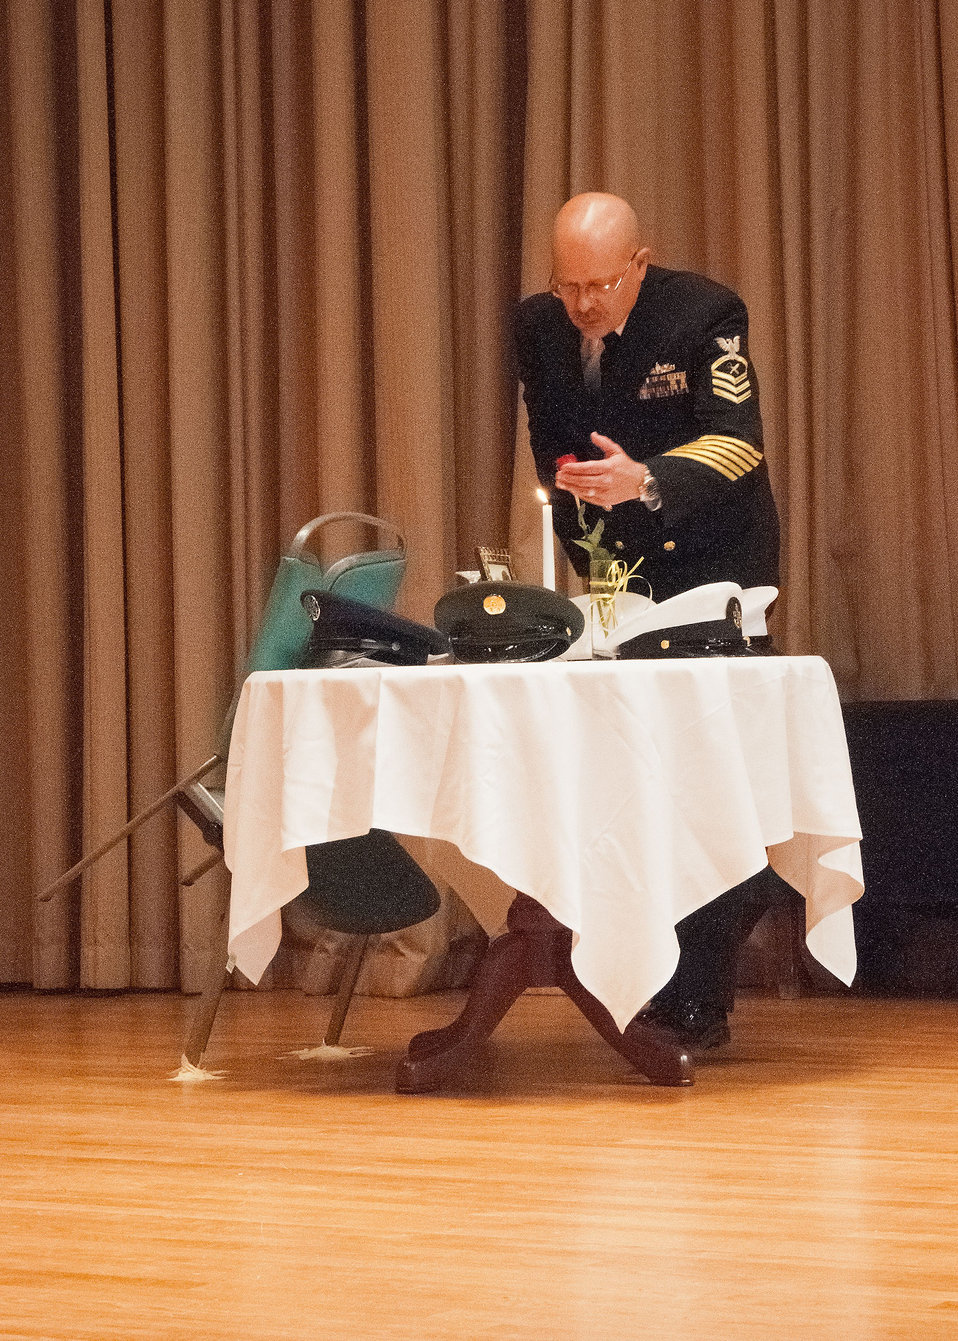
Classified National Security Programs, Office of Homeland Security and Emergency Coordination (OHSEC) U.S. Department of Agriculture U.S. Navy Chief Keith T. McElfresh extinguishes the candle before retiring the POW/MIA Table at USDA's Veterans Day Observance: Honoring All Who Served Wednesday, Nov. 7, 2012 in Washington, D.C. The POW/MIA Ceremony is an opportunity to remember those gallant individuals who fought and died for our country and paid an incredible price to help preserve the freedoms we enjoy today.